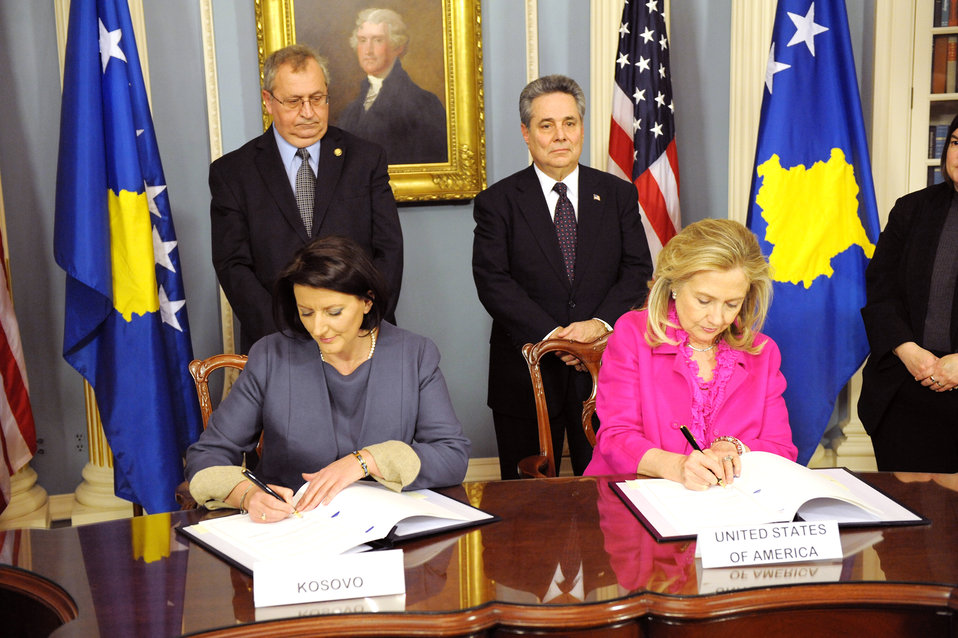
Secretary Clinton and President of Kosovo Jahjaga Sign U.S.-Kosovo Agreement on Protection, Preservation of Certain Cultural Properties

U.S. Secretary of State Hillary Rodham Clinton and President of Kosovo Atifete Jahjaga sign the U.S.-Kosovo Agreement on the Protection and Preservation of Certain Cultural Properties, at the U.S. Department of State in Washington, D.C., on December 14, 2011.